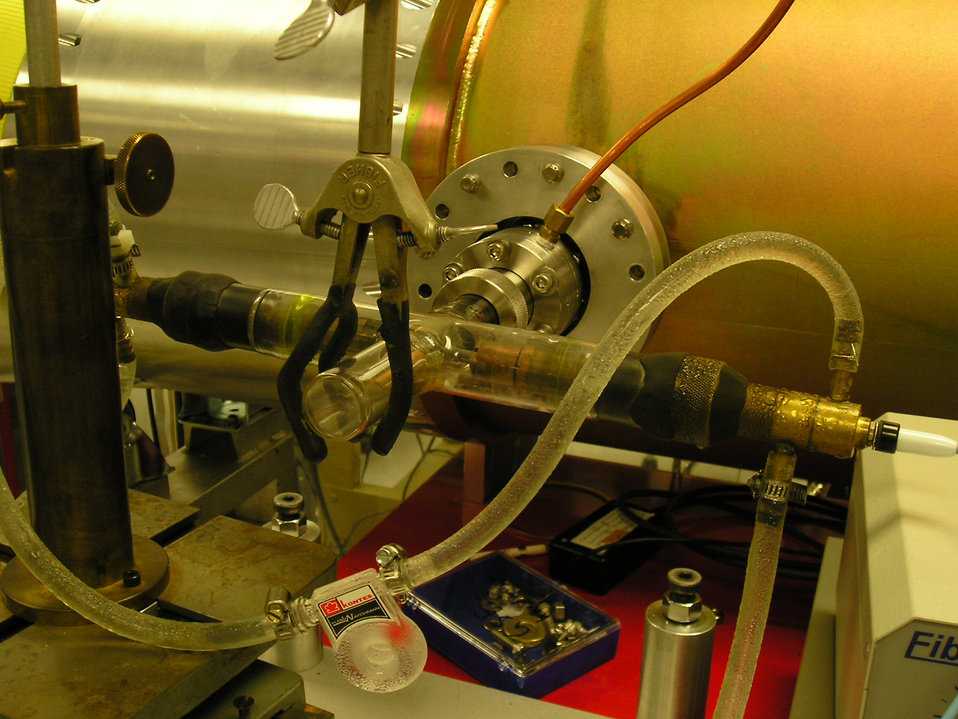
Ultraviolet Lights; NASA

NIST's unique 'sliding spark source' (inside the glass tubing) feeds ultraviolet (UV) light into NASAs Solar Ultraviolet Magnetograph Investigation instrument, designed to measure magnetic fields on the sun.